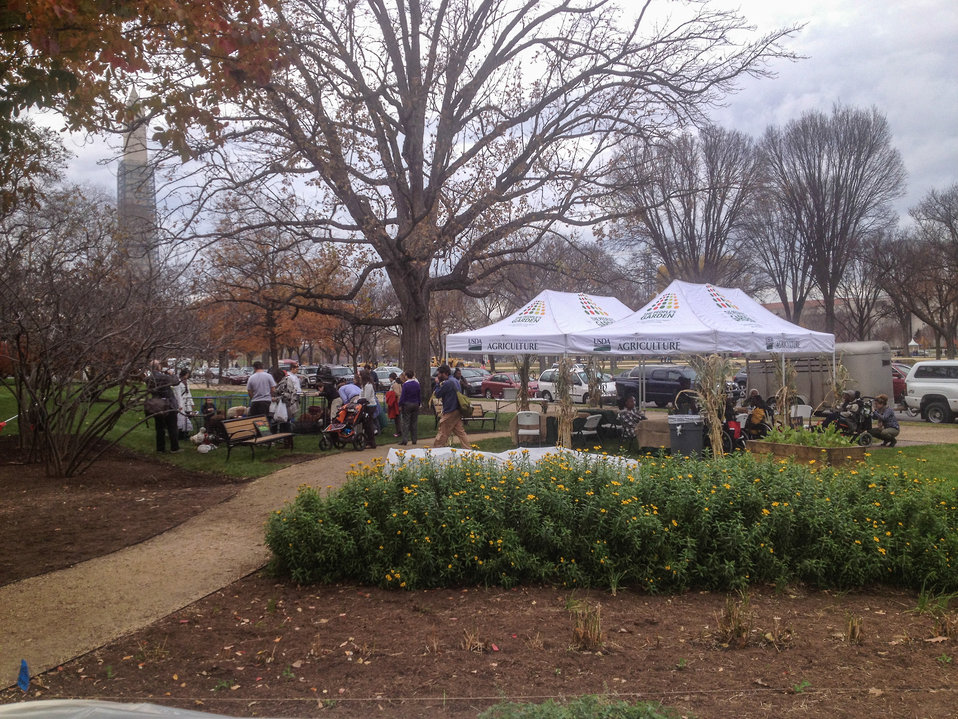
The People's Garden children's learning area with a small farm animal petting pen allowed children to pet the animals during the U.S. Department of Agriculture (USDA) farmers markets and Harvest Festival at the USDA Whitten Building east parking lot in Washington, DC, on Friday, November 22, 2013.